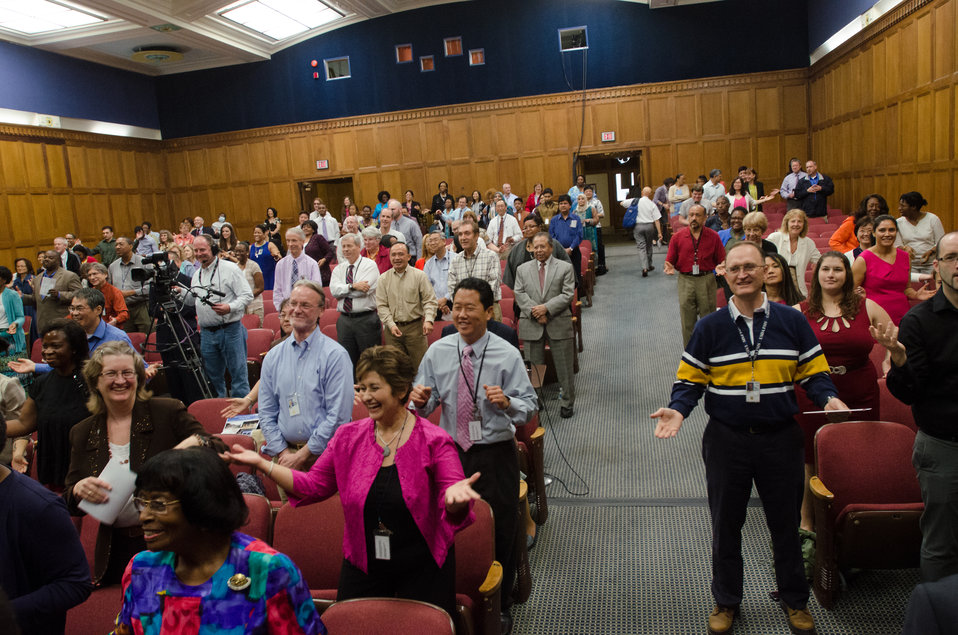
U.S. Department of Agriculture’s (USDA) audience members stand and learn to hula dance from USDA employee Saleia Afele Faamuli (not seen on stage), during the USDA Asian Pacific American Heritage Month Observance, at the USDA headquarters in Washington, D.C., on Thursday, May 23, 2013. The Hawaiian hula dance is one of the many valued cultural activities from the Pacific Islands, and represents part of This year’s theme: “Building leadership; Embracing the Cultural Values and Inclusions.”